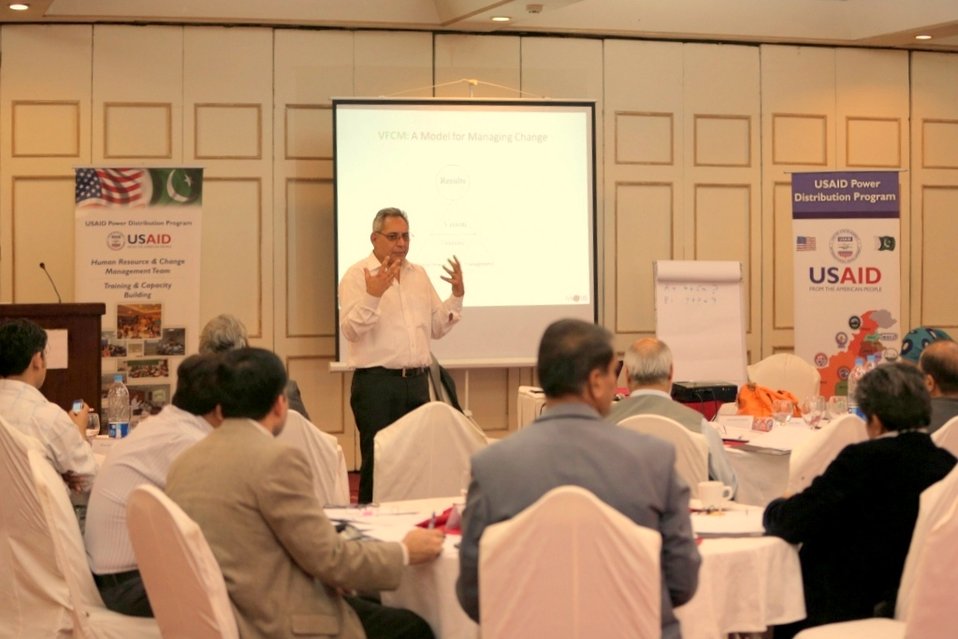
USAID imparts Crucial Management Skills to DISCOs Senior Managers

Over 50 senior managers of all nine DISCOs attended two Management Development Program (MDP) workshops this month in Islamabad. The MDP focuses on three core activities: a big-picture focus concentrating on achieving greater fulfillment in both the professional and personal sphere; reinforcing the underlying concepts of performance management and reintegrating it into personal and professional lives; anchoring relevant beliefs about performance that will sustain over the long run. Feedback thus far has been very positive with over 80% of participants rating the MDP as an excellent initiative.

“This workshop is a development initiative being taken to develop management skills of the senior management of DISCOs in crucial business areas helping to boost leadership skills that are instrumental in running a company successfully, thus increasing employee satisfaction.”
USAID Power Distribution Program Human Resources & Change Management Team Lead
Tahir Ali Khan